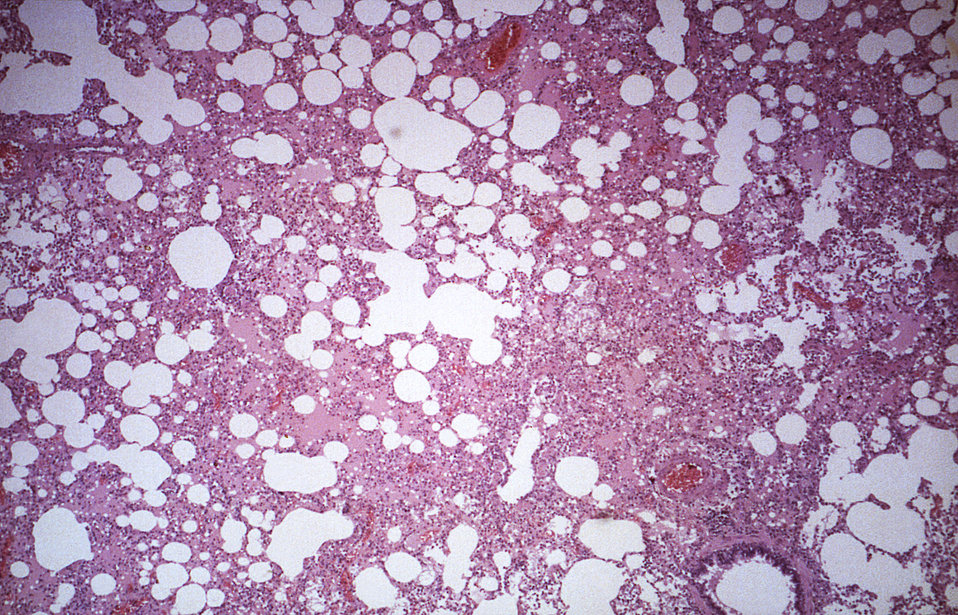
Using immunohistochemical (IHC) technique, this photomicrograph of a canine lung tissue specimen, revealed some of the cytoarchitectural histopathologic changes associated with a Nipah virus infection.